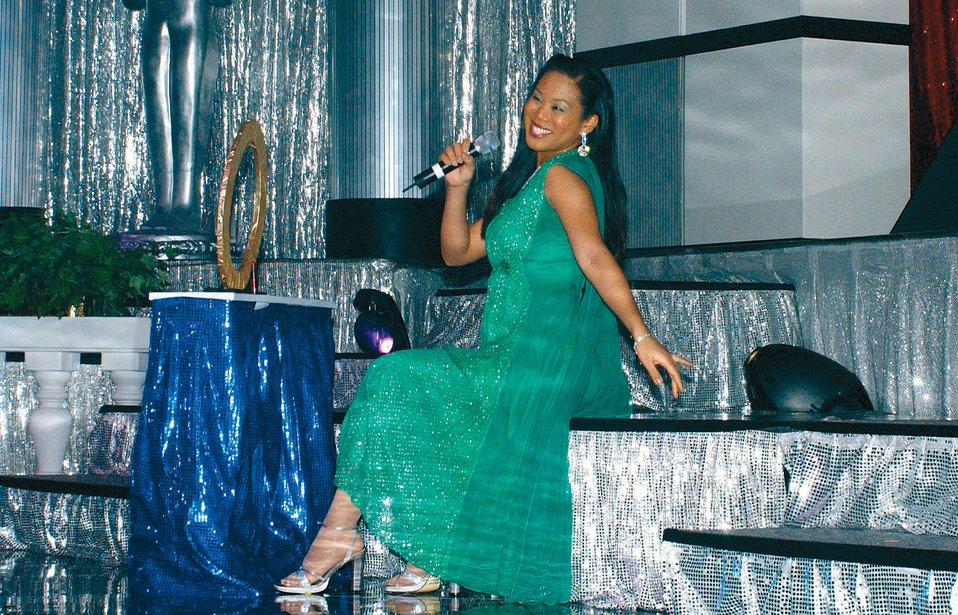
Spangdahlem Airman describes life with Tops in Blue

LACKLAND AIR FORCE BASE, Texas -- Airman 1st Class Beverly Sadural performs here at the 2005 Air Force Worldwide Talent Contest. She was one of 30 selected for the 2005 Tops in Blue tour, which will have traveled to more than 120 locations in the United States and 25 foreign countries by the end of the tour. Airman Sadural is an engineering assistant with the 52nd Civil Engineer Squadron at Spangdahlem Air Base, Germany.